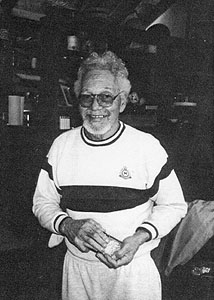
Archie Williams

Lt. Col. Archie Williams